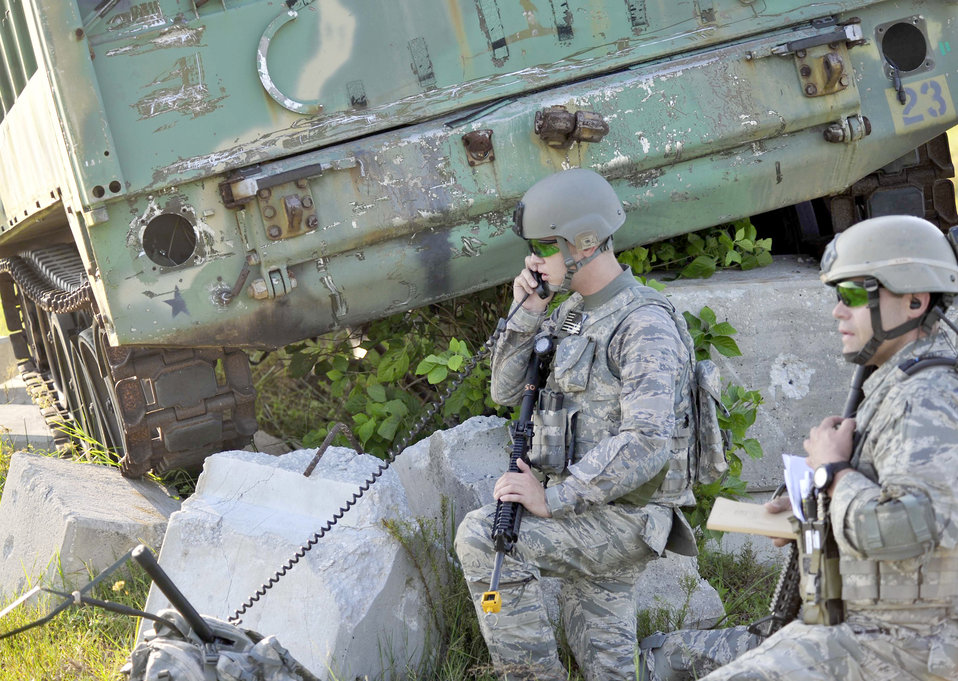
Atlantic Strike

Tech. Sgt. Tony Hall (front) and Senior Airman Blake Sigmon relay their positions to their joint fires observers, Sept. 14, 2010 as part of Atlantic Strike 10-02. Atlantic Strike is a biannual Air Combat Command sponsored joint training exercise designed for the tactical employment of air power. Sergeant Hall and Airman Sigmon are Tactical Air Control Party controllers with the 118th Air Support Operations Squadron.